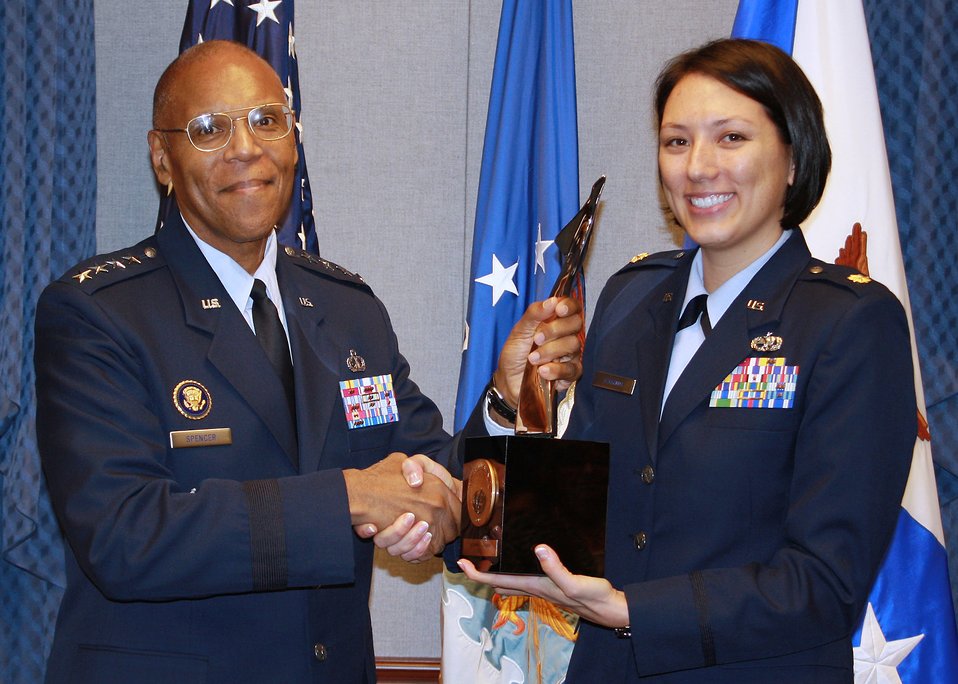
Lew Award

Air Force Vice Chief of Staff Gen. Larry Spencer presents the Gen. Lew Allen Jr. Award to Maj. Jennifer Gurganus during a ceremony in the Pentagon on Oct. 31, 2012.